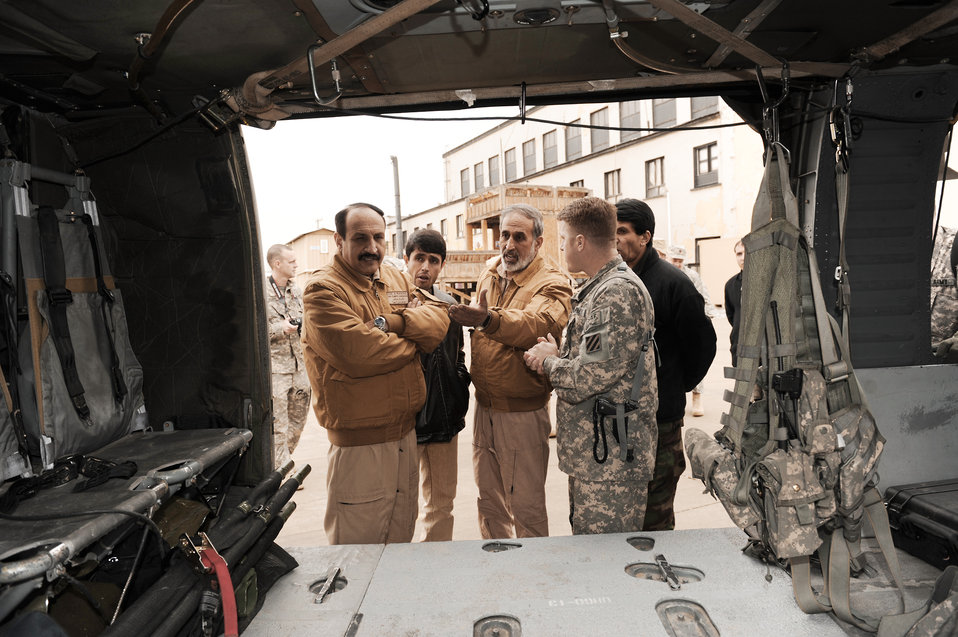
ANAAC Conference

Army Staff Sgt. Joseph McCormick gives soldiers from the Afghan National Army Air Corps a tour of a UH-60 Black Hawk helicopter March 6, 2010, at Bagram Airfield, Afghanistan. The ANAAC members were at Bagram Airfield for a joint medical evacuation mission conference.